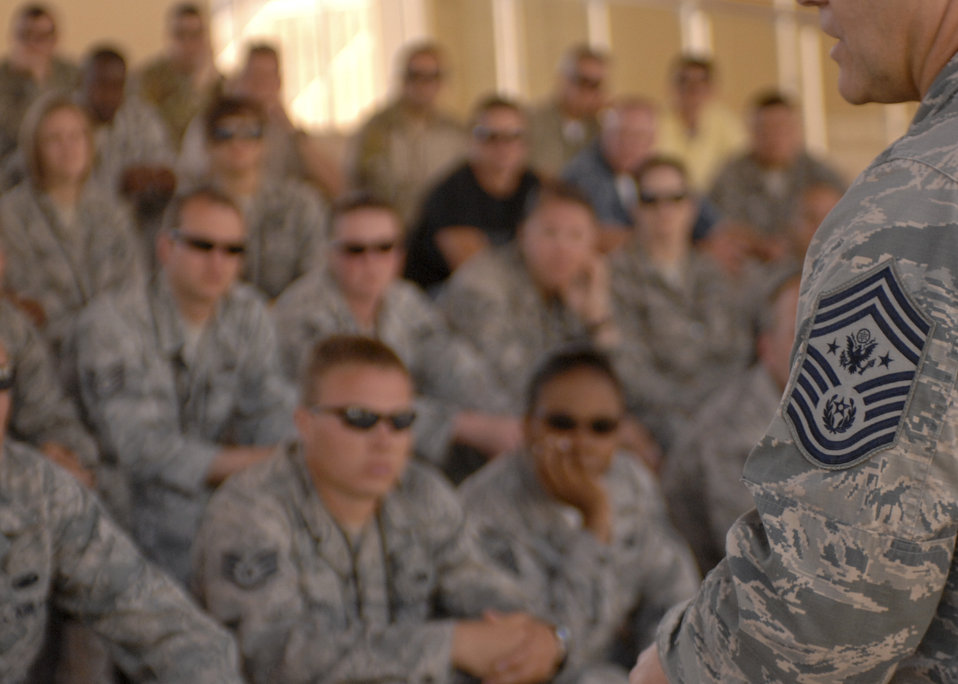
CMSAF visist in Jordan supporting exercise

Chief Master Sgt. of the Air Force James A. Roy addresses Airmen deployed in support of Exercise Eager Lion 12 May 19, 2012, in Amman, Jordan. Eager Lion 12 is a recurring, multinational exercise designed to strengthen military-to-military relationships and interoperability among 19 partner nations as they navigate scenarios simulating future complex national security challenges.